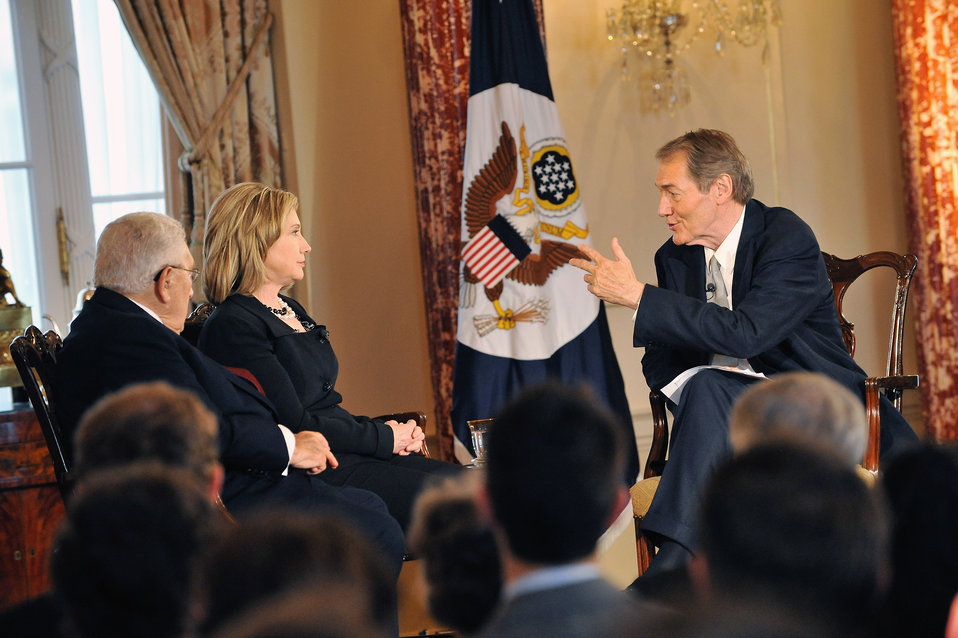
Secretary Clinton and Former Secretary Kissinger Film 'Conversations on Diplomacy, Moderated By Charlie Rose'

U.S. Secretary of State Hillary Rodham Clinton and former U.S. Secretary of State Henry Kissinger film, 'Conversations on Diplomacy, Moderated by Charlie Rose,' at the U.S. Department of State in Washington, D.C., on April 20, 2011.